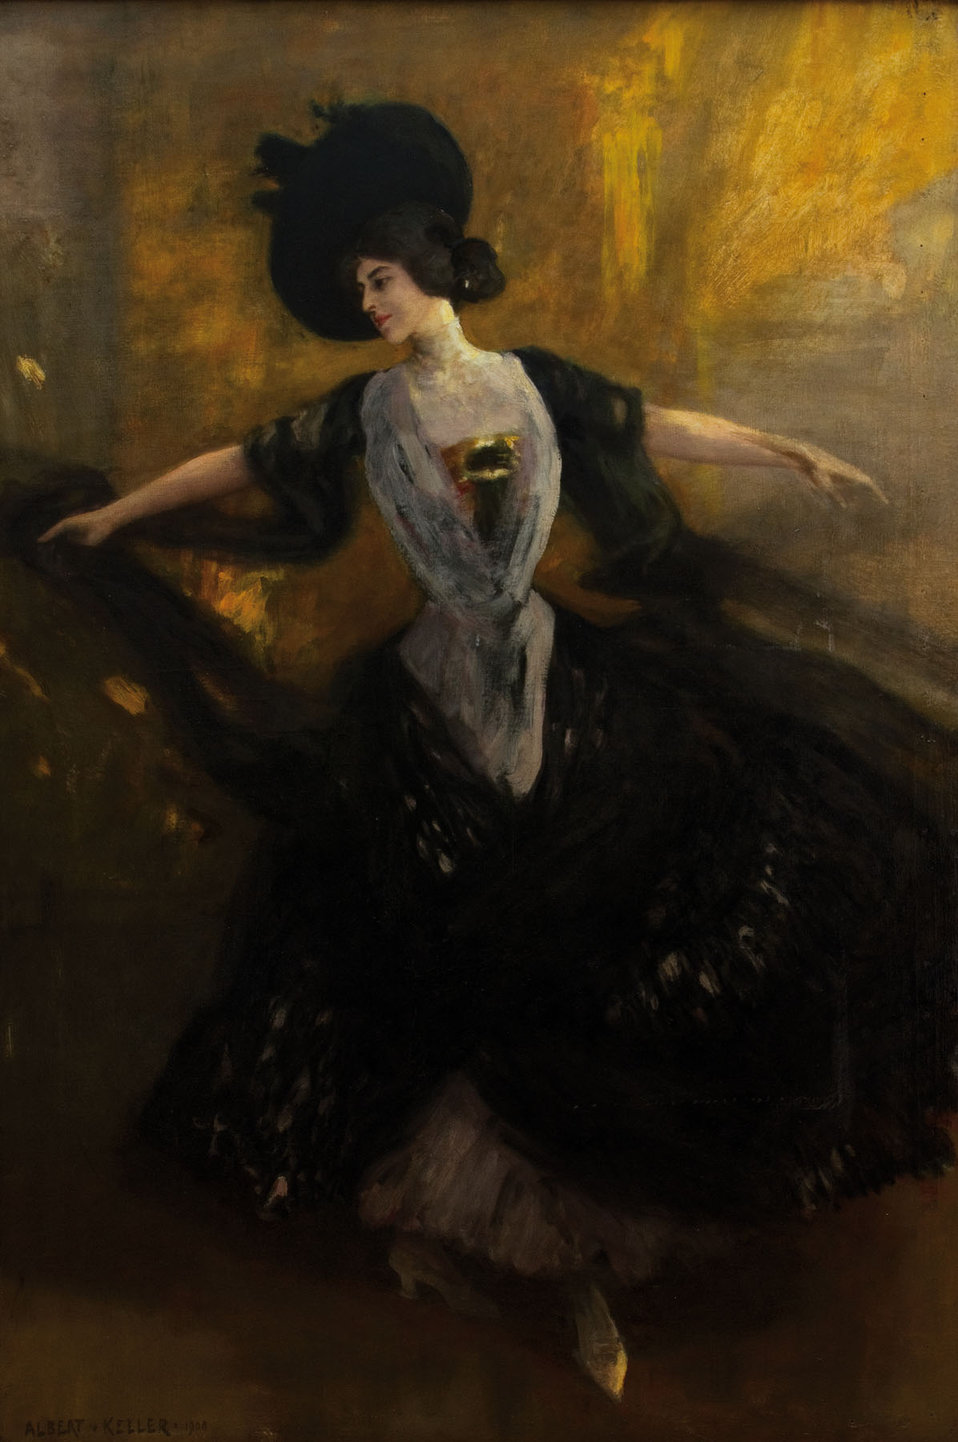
Albert von Keller Tanzende Dame 1900